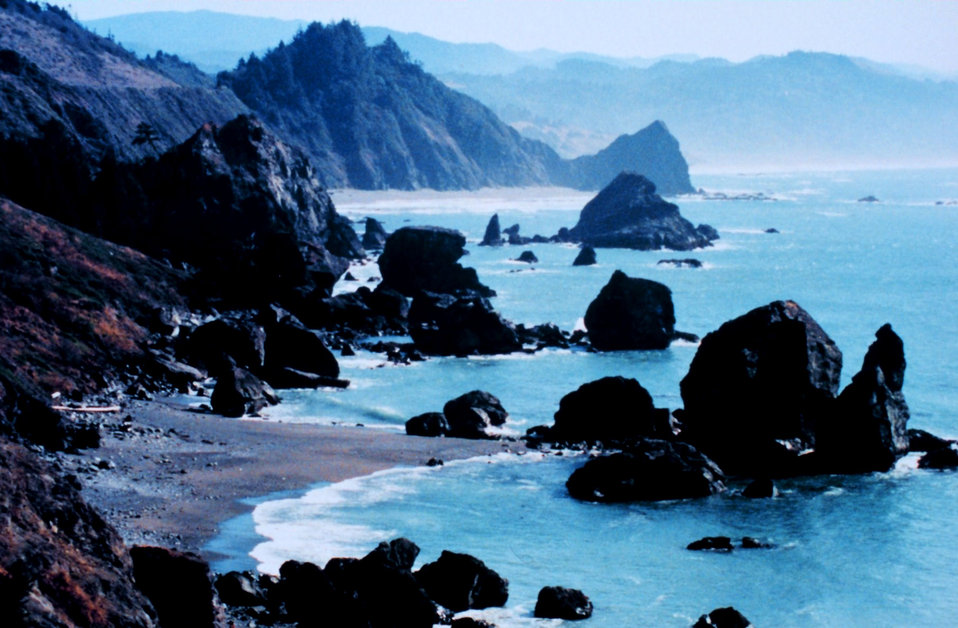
Oregon coast just south of Port Orford.